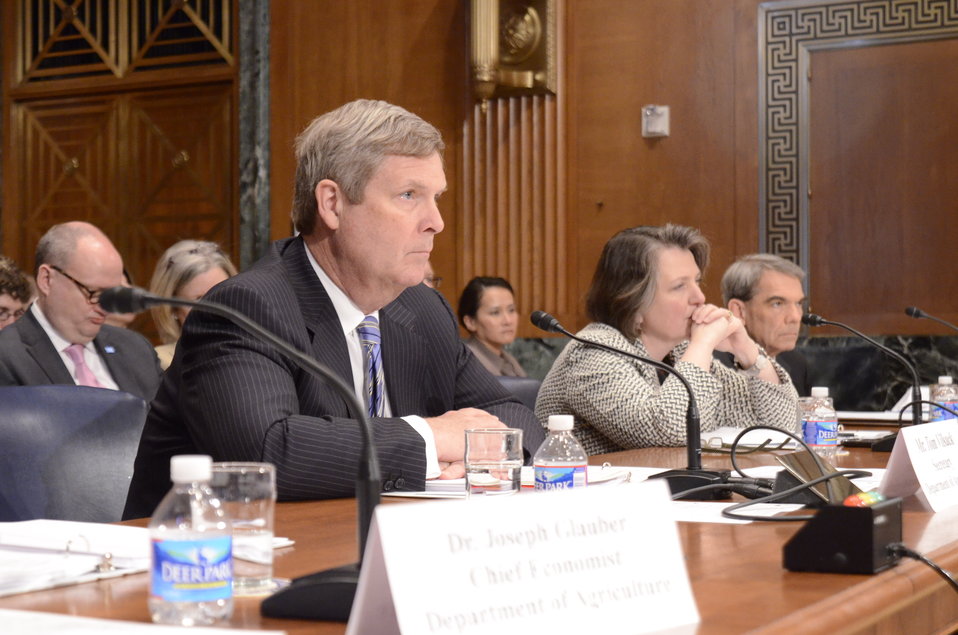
Agriculture Secretary Tom Vilsack and Agriculture Deputy Secretary Dr. Kathleen Merrigan testify before the Senate Agriculture Appropriations Committee on the fiscal year 2013 budget at the Dirksen Senate Office Building in Washington, D.C. on Thursday, March 29, 2012.